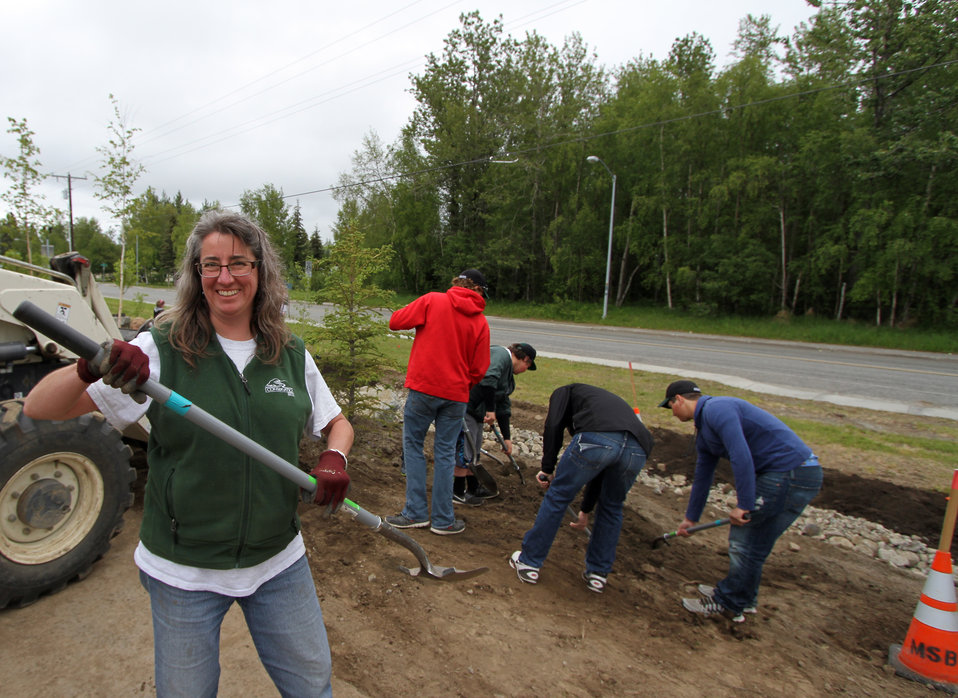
Rain Garden Installation

A rain garden installation at the Palmer Senior Center in Southcentral Alaska. Rain gardens are vegetated areas built specifically to manage stormwater runoff from driveways, sidewalks, roofs, and other paved surfaces. Here, Catherine with Mat-Su Conservation Services wields her shovel. USFWS/Katrina Mueller